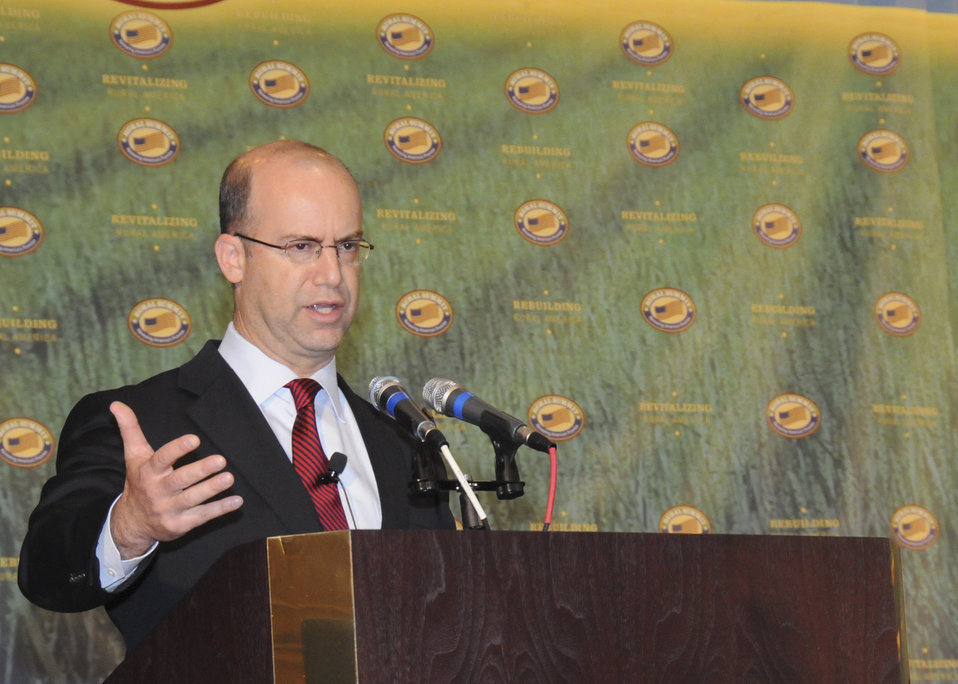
US Department of Agriculture Rural Utility Service Administrator John Adelstein moderator of the Building Critical Infrastructure for a 21st Century Rural Economy listening session is reporting on the ideas and suggestions received from participants during the National Rural Summit held at Jefferson College in Hillsboro, MO, on Thursday, June 3, 2010. USDA Photo 10di1388-319.